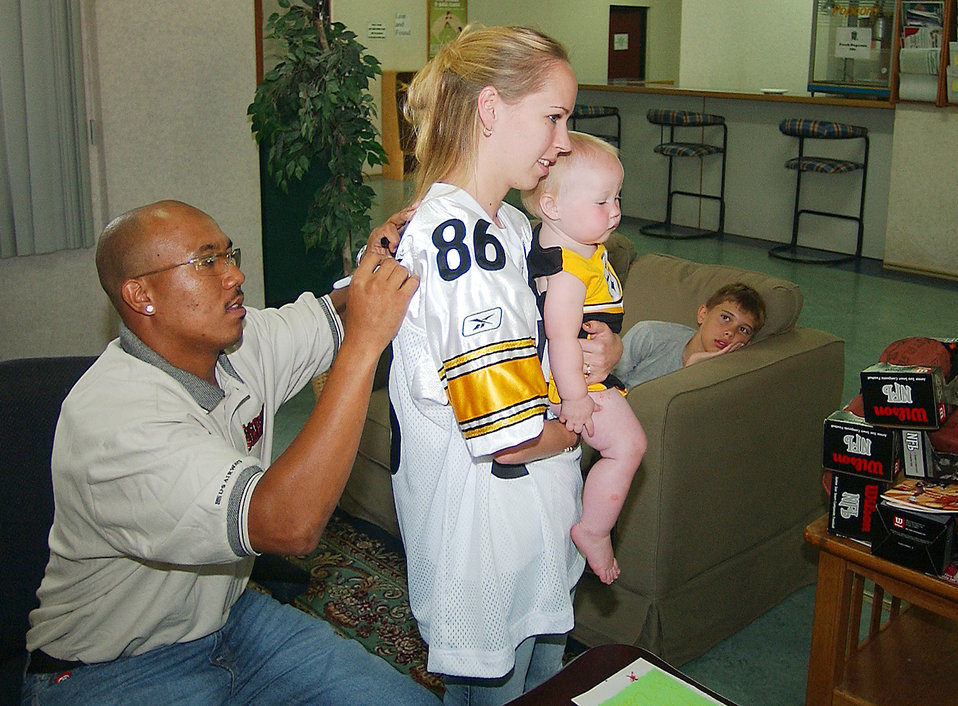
Steeler fan

INCIRLIK AIR BASE, Turkey -- Hines Ward, Pittsburgh Steeler wide receiver, signs Susan Perkin's jersey while she holds her 14-month-old daughter, Mattie, here June 17. Mr. Ward stopped here as part of a U.S. Air Forces in Europe tour.